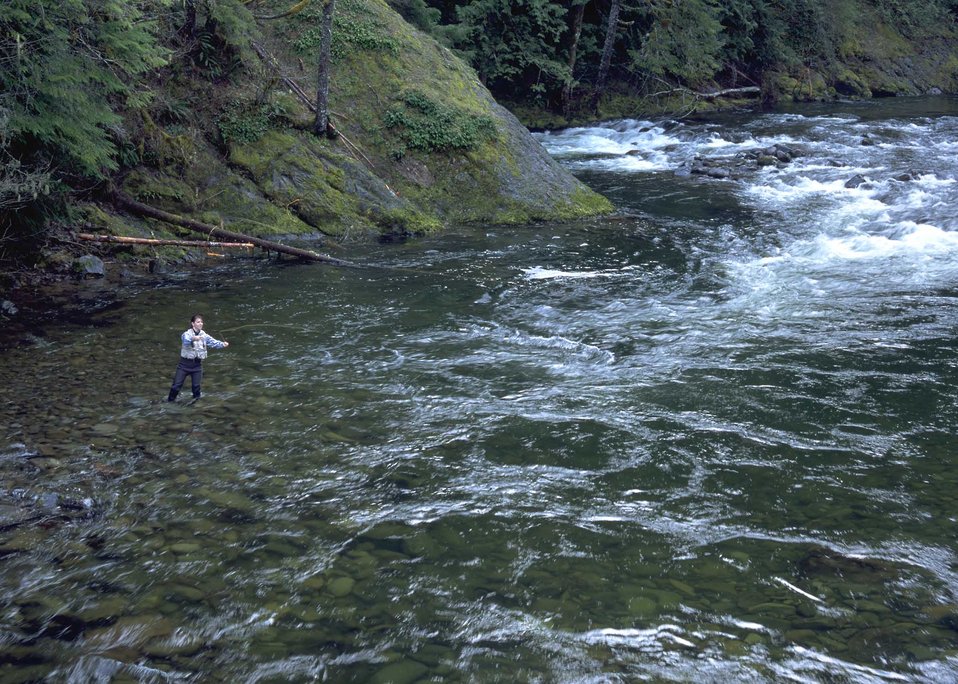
Recreationalist, Gayle Norman, fly fishing in a mountain stream. Many water managers use NRCS's snow survey data to manage streams for recreation.